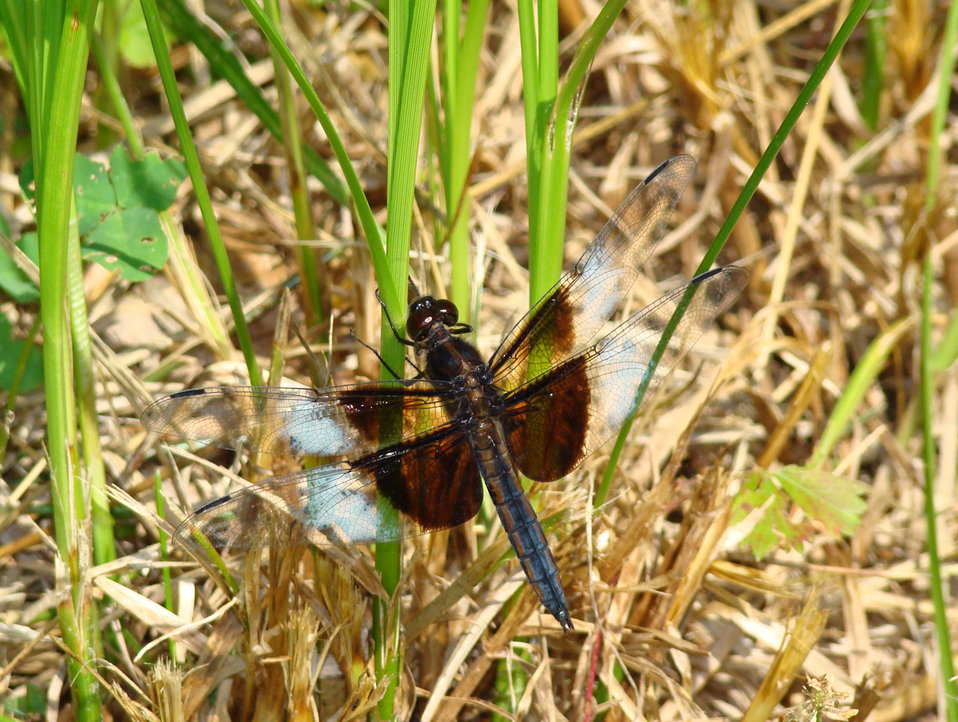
Black and white dragonfly

A dragonfly with black and white wing colorations..